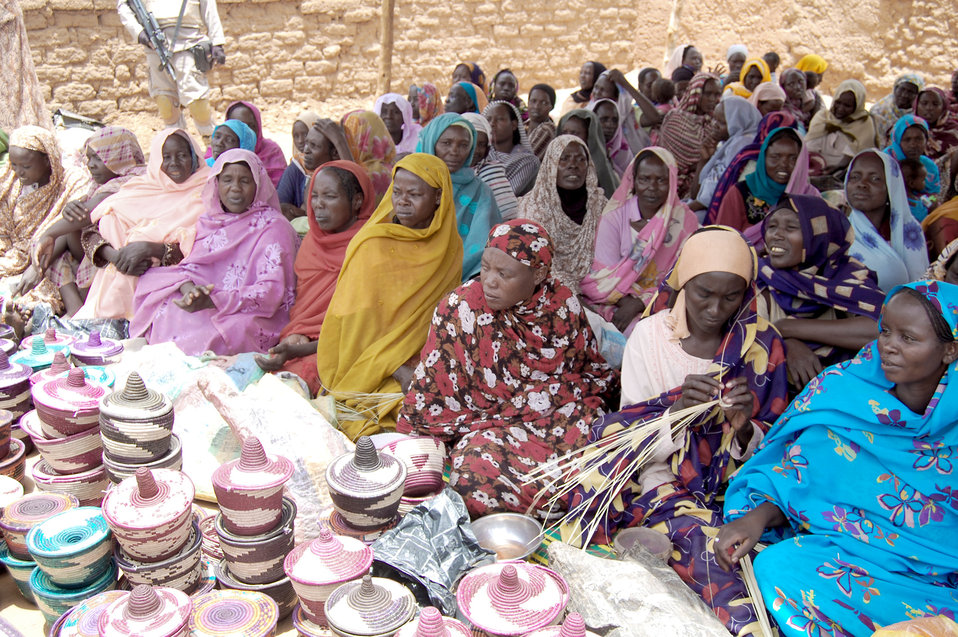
Africa Service

The women of the Abu Shouk camp came out to celebrate receiving solar cookers donated by Maj. Jonathan Gration. Using the solar cookers cuts the requirement for firewood by two-thirds, keeps the women from having to search for firewood outside of the camp where they are at risk for attack and preserves Darfur's trees, which currently ranks fourth in the world for deforestation. Major Gration is a pilot assigned to the 90th Fighter Squadron at Joint Base Elmendorf-Richardson, Alaska.